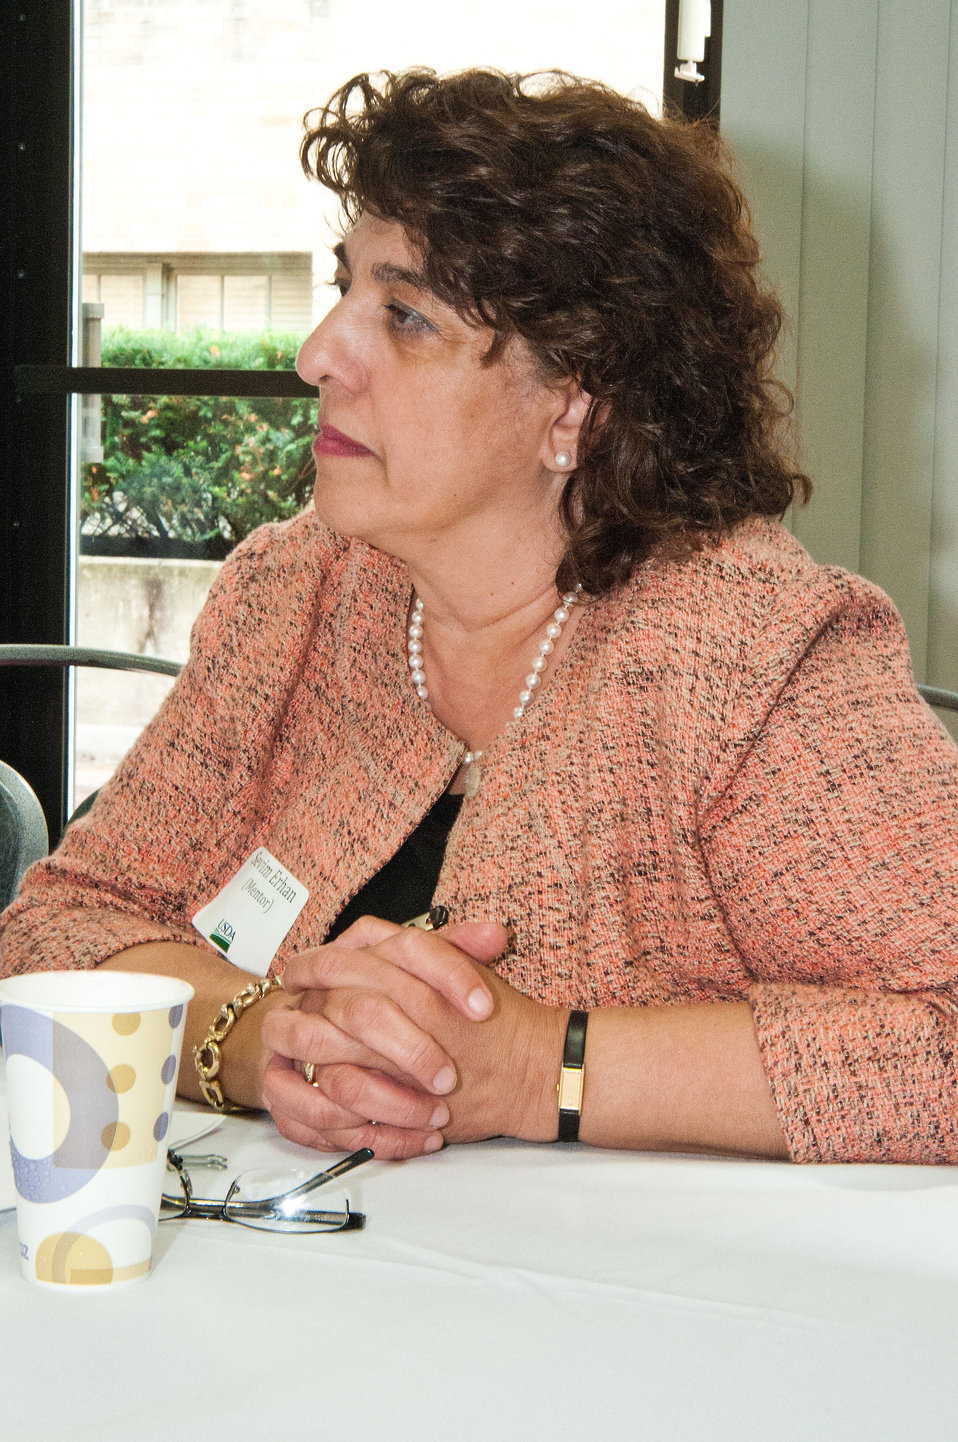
U.S. Department of Agriculture (USDA) Agricultural Research Service (ARS) and mentor Sevim Erhan listens to responses about workplace “Atmosphere” from employees attending USDA's Office of Human Resources Management (OHRM) Virtual University’s Fall Flash Mentoring Event at USDA in Washington, D.C. on Thursday, Sept. 6, 2012.